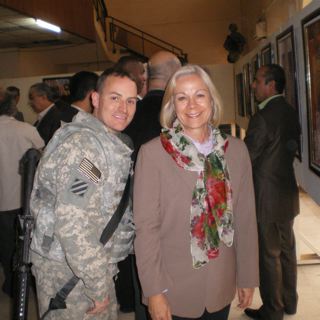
PRT Members Carol Hanlon and Brian Goodman Attend Art Exhibit

Karbala PRT Political Advisor Carol Hanlon, and PRT staff member, PO1 Brian Goodman attend an art exhibit mounted by artist Ayed Meeran Selman at the Karbala Culture House in Karbala Province, Iraq, December 6, 2009.